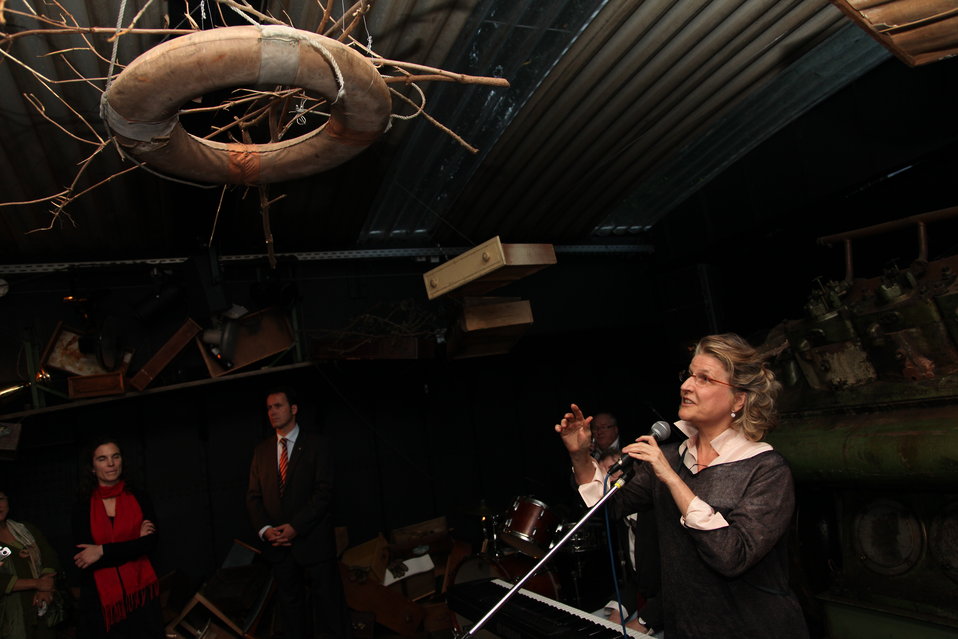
Artist Jana Napoli Remarks on the 'Floodwall' Exhibit

Artist Jana Napoli gives her remarks at the opening of the 'Floodwall' exhibit in and refers to the life ring found in the floodwater of New Orleans, Louisiana. The exhibit took place in Berlin, Germany, from September 10, 2010, to October 15, 2010.